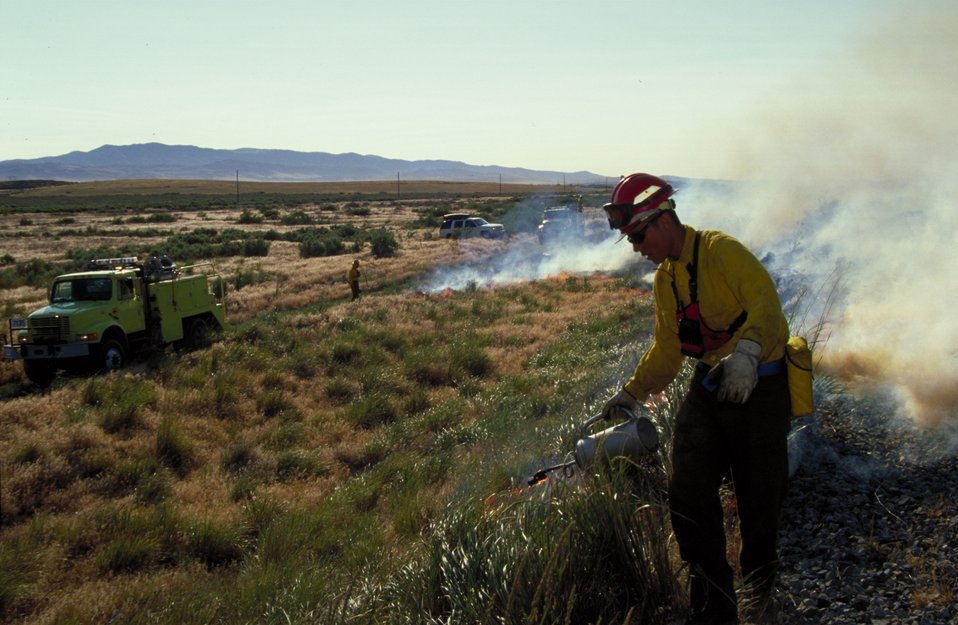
Prescribed burn Fire Season 2000 Lower Snake River District LSRD